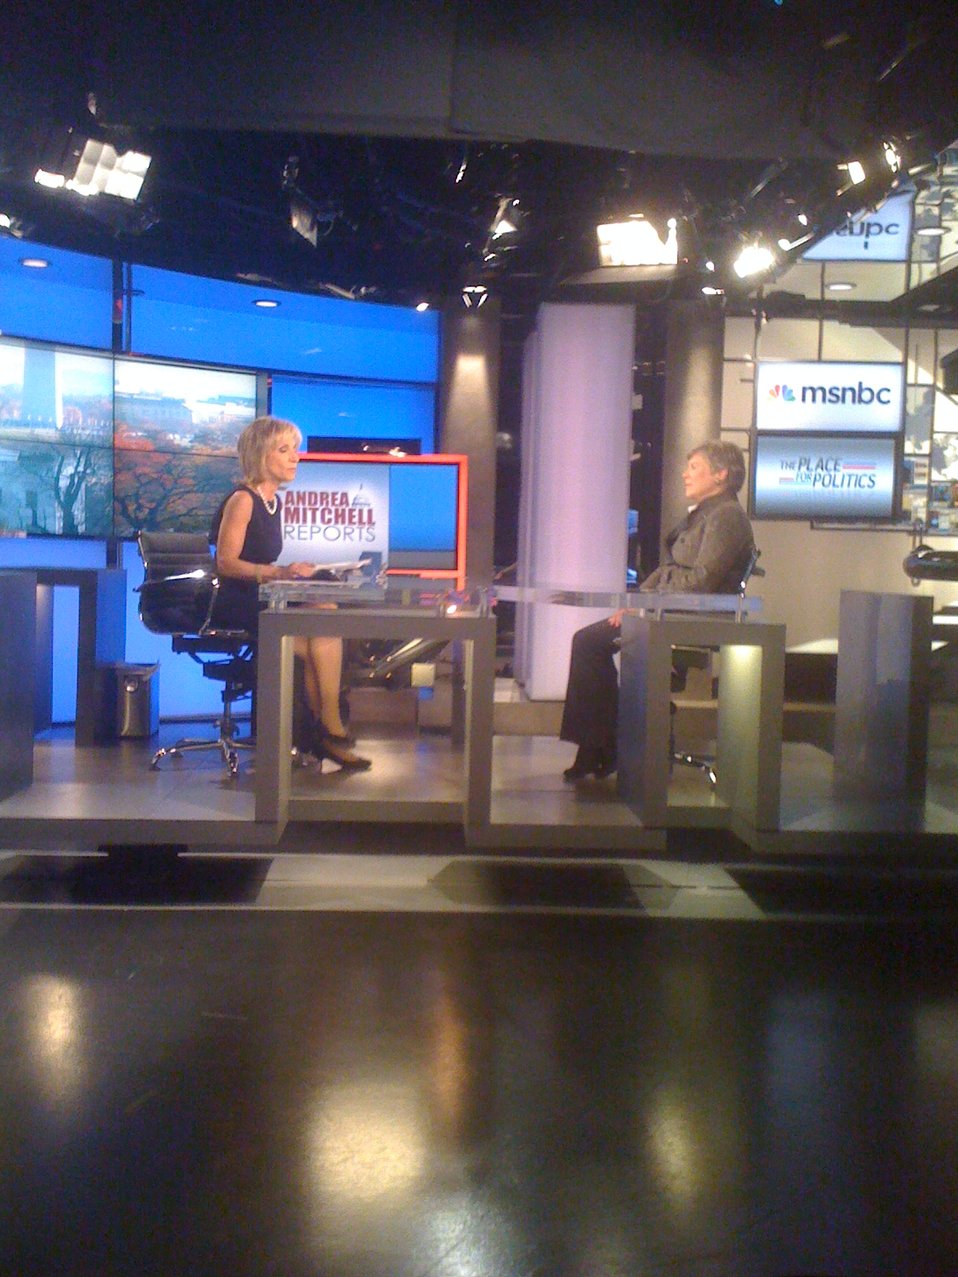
Chief START Negotiatior Gottemoeller Is Interviewed By NBC's Andrea Mitchell

Chief START negotiator, Rose Gottemoeller, who serves as U.S. Assistant Secretary of State for the Bureau of Arms Control, Verification and Compliance, is interviewed by Andrea Mitchell at the NBC Studios in Washington, D.C., on November 19, 2010.